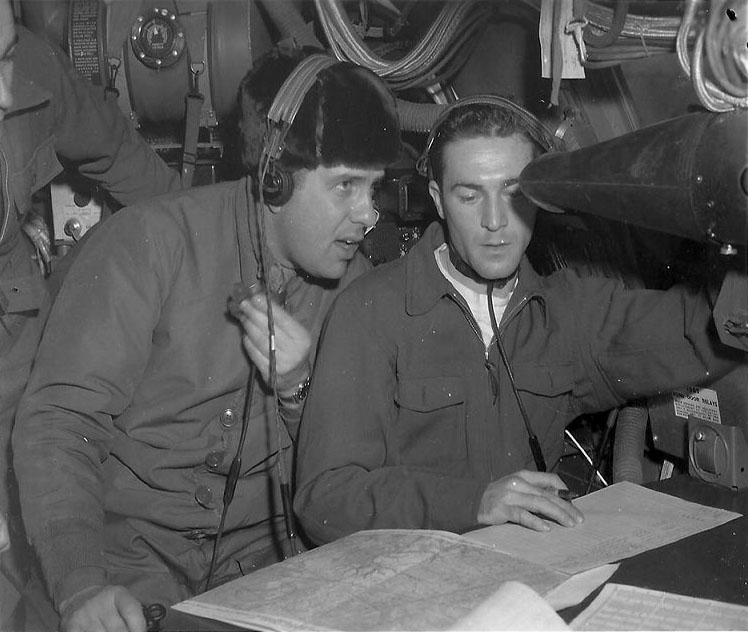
Arctic first

Then-Maj. Maynard E. White, commander of the 46th Reconnaissance Squadron, and Lt.